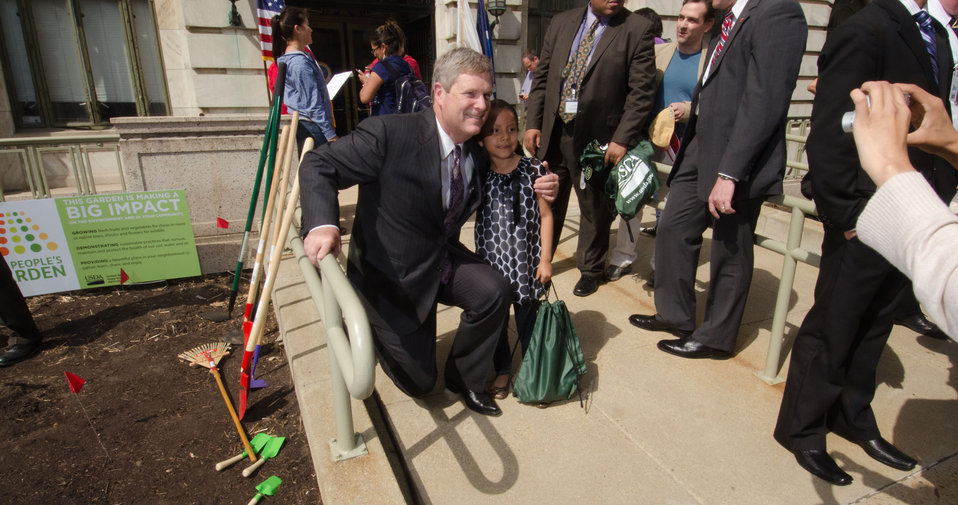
Agriculture Secretary Tom Vilsack met with Native American Youth at the U. S. Department of Agriculture in Washington, DC, on Wednesday, April 2, 2011 to encourage them to pursue a healthy lifestyle. After opening remarks and questions, Secretary Vilsack spent time with the 30 Students from Eastern and Western Tribes, Southeast Alaska, and Tuba City, Arizona, at he garden called The Roots of American Agriculture, and is part of the Headquarters’ People’s Garden.